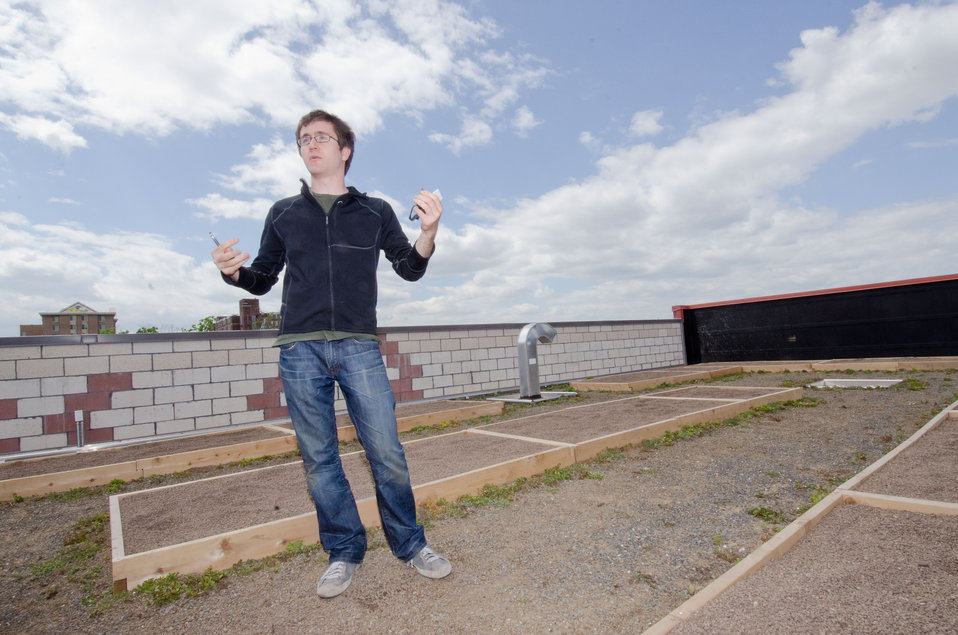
Volunteer coordinator Erin Holmes talks about the rooftop vegetable garden that, is ready for planting at Bread for the City in Northwest Washington, DC, on Friday, April 29, 2011. The garden features specialized soil made of organic and inorganic material for rooftop gardens. The 26 wooden planters are about 4 inches tall but are not separate from the soil covering the roof, so there is a 10' depth to the plant in the boxes. Ground cover plants are already on site and await a team of volunteers to plant them in the walkways to retain moisture and help keep the soil temperature stable. This will be the largest of this kind in the Metro DC area. In addition to supplementing the fresh vegetable given to the community, it will also allow local residents to grown produce that is not normally marketed in this area.